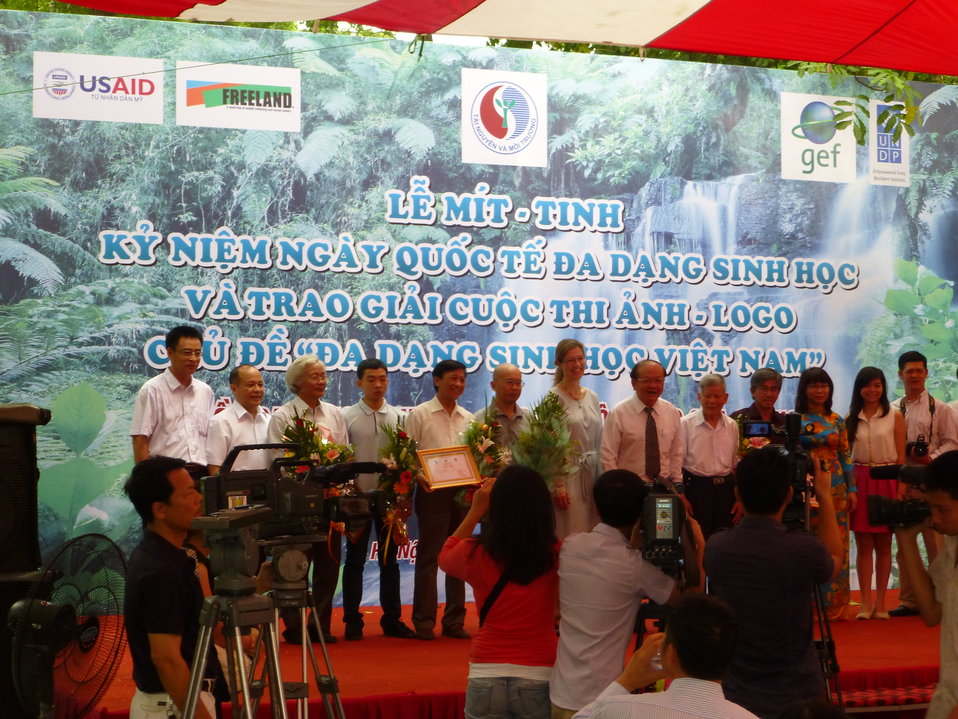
USAID Supports International Day for Biological Diversity in Hanoi